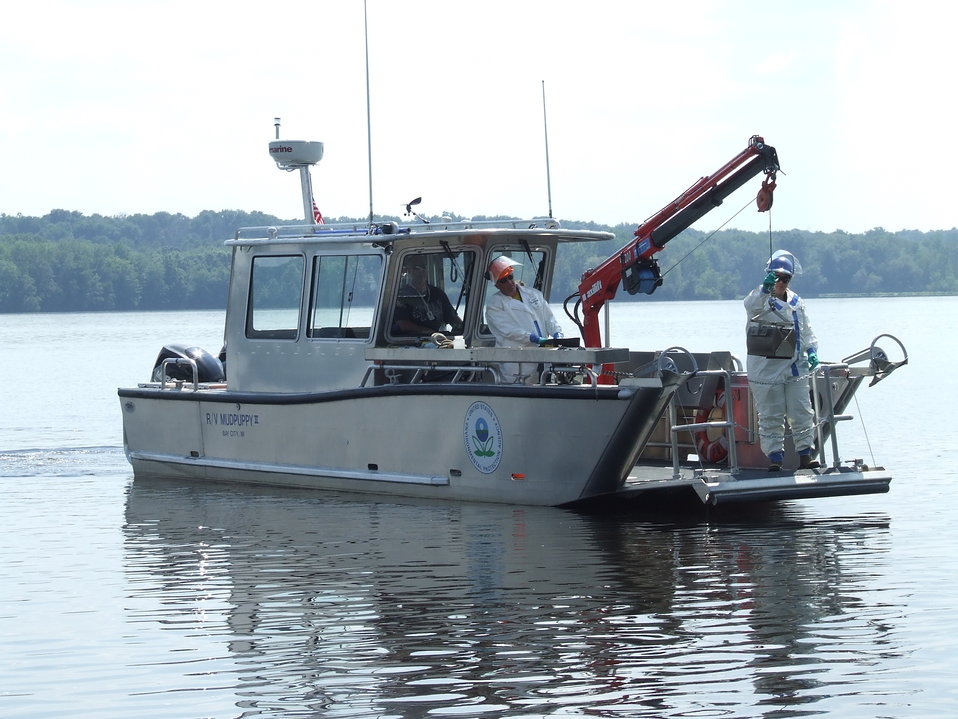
EPA's response to the Enbridge oil spill

August 1, 2010 - EPA's research vessel MudPuppy II on Morrow Lake.